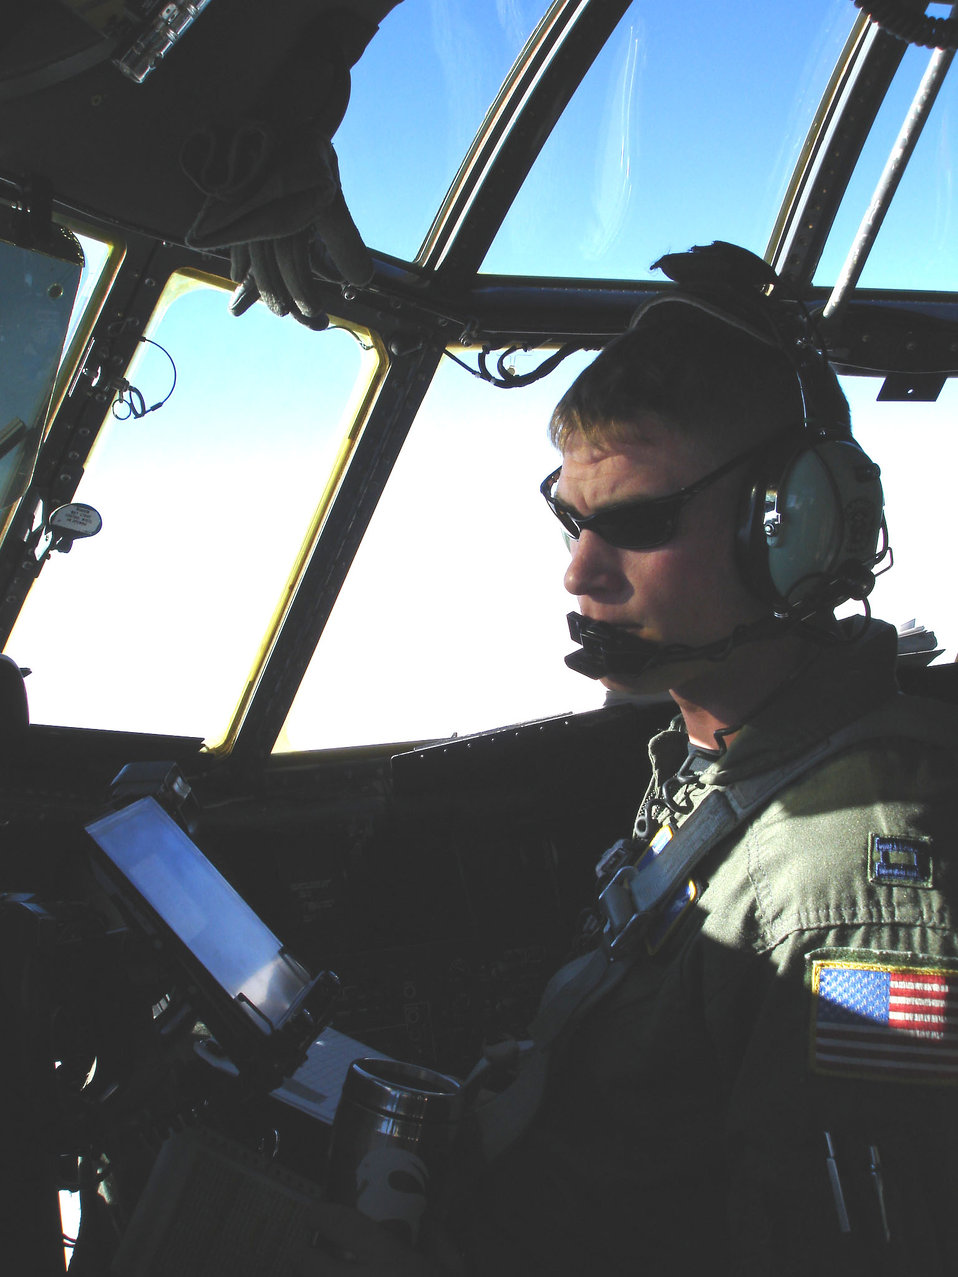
AF's first active associate unit deploying to Balad

A 30th Airlift Squadron co-pilot trains as a member of the Air Force's first active associate unit. The unit activated July 1, 2006, at the Cheyenne Air National Guard Base and is due to deploy to Balad Air Base, Iraq, in October. The unit embodies the total force concept and places active-duty Airmen with a Guard unit to share aircraft, supplies and infrastructure.